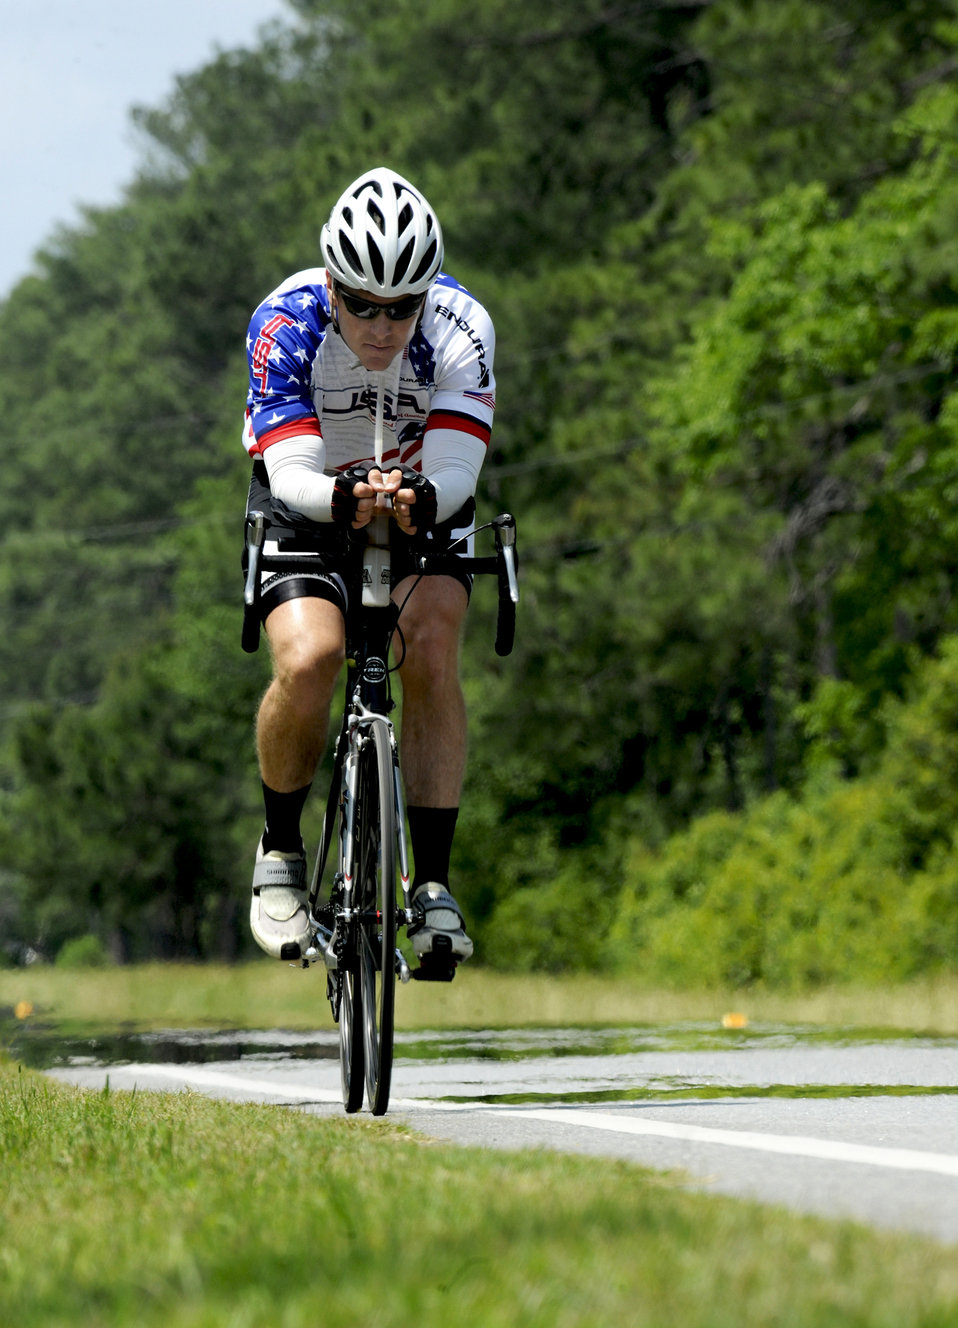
Jason Rogers, an Air Force veteran, cycles through Georgia's heat and humidity May 2, 2011, as he nears the finish of his 2,500-mile trip across the U.S. Mr. Rogers was a liquid-fuel-systems maintenance specialist during operations Desert Storm and Shield and decided to ride to raise money for wounded veterans through the Wounded Warrior Program.